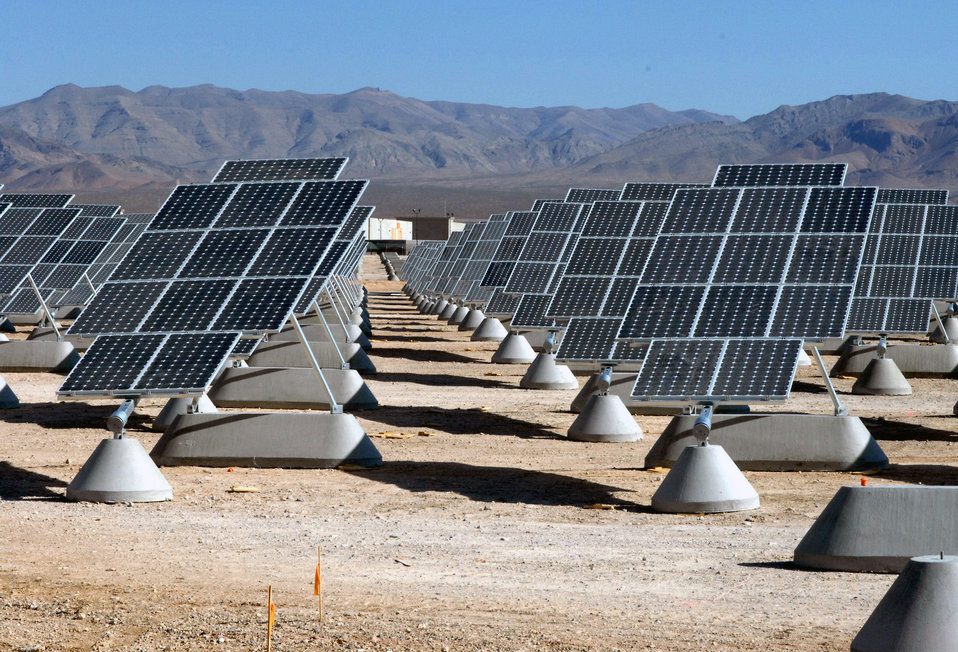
Energy Forum showcases environmental achievements

The largest photovoltaic solar power plant in the United States is becoming a reality at Nellis Air Force Base, Nev. The solar arrays can produce 15 megawatts of power for the Air Force.